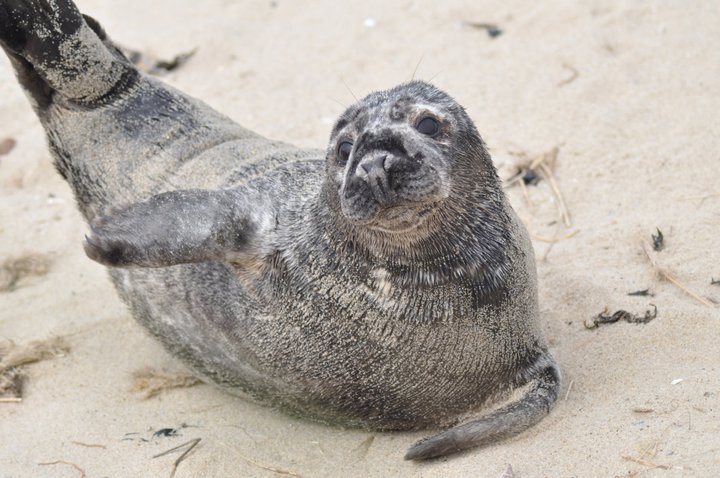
Seal at Nantucket National Wildlife Refuge in Massachusetts.